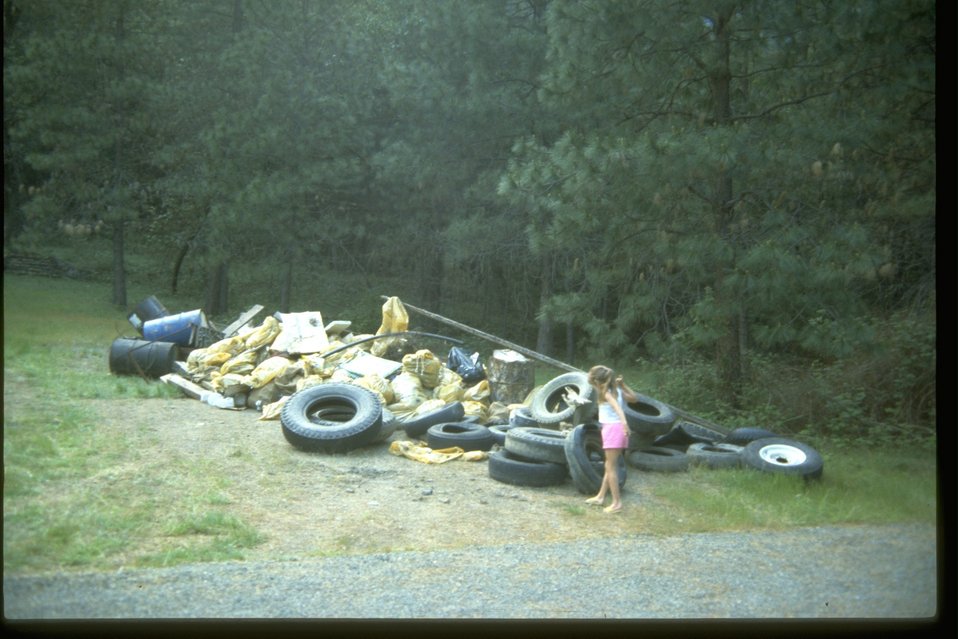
National River Cleanup Trash Pile